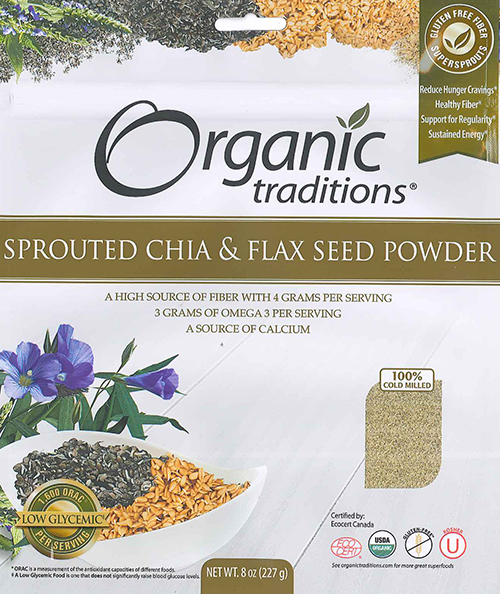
RECALLED – Chia and Flax seed powder

June 4, 2014 – Product Recall – Health Matters America, Inc, Recalls Organic Sprouted Chia Seed Powder and Sprouted Chia/flax Seed Powder Due to Possible Health Risk.